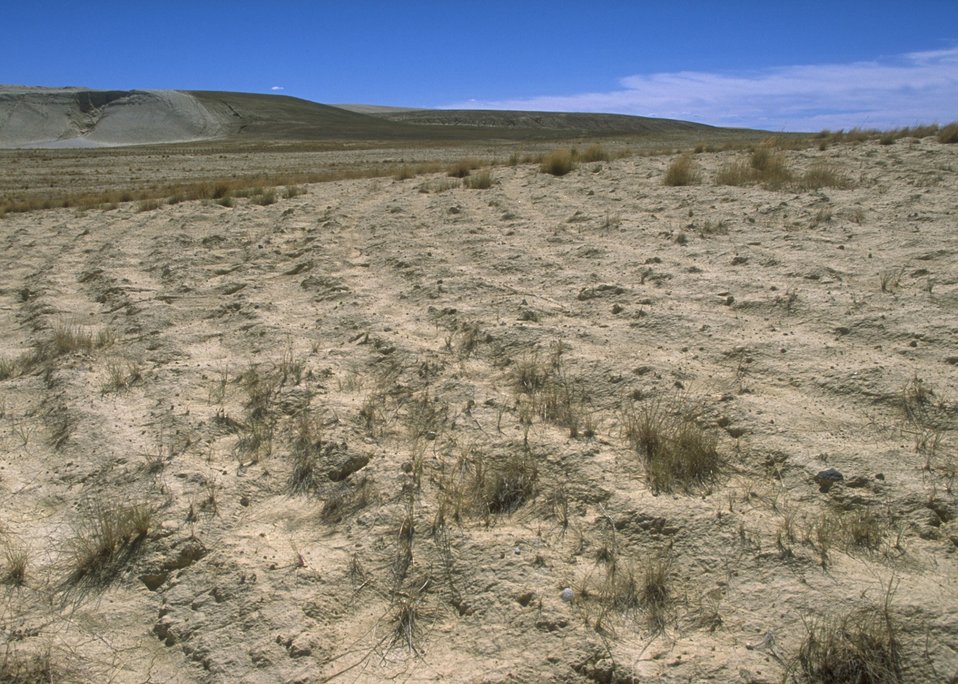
Gas Hill Abandoned Mine Lands in various stages of rehabilitation, Lander Field Office.